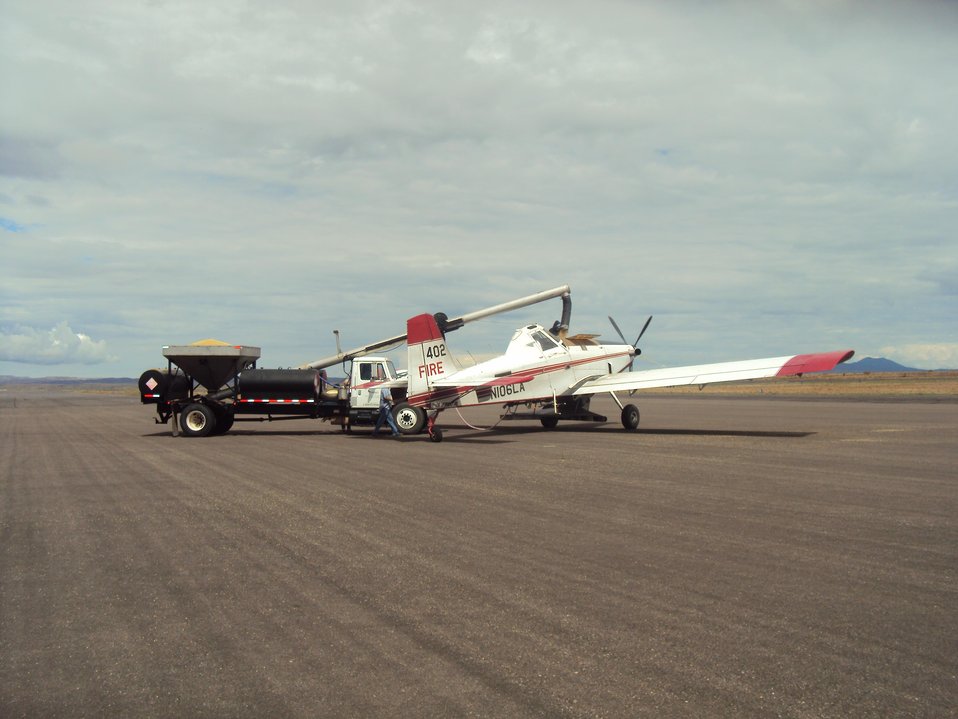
Seed is loaded into the Air Tractor for aerial seeding of severe burned areas of the Silver Fire. The Silver Post Fire response has the Burned Area Emergency Response (BAER) team beginning operations to seed acres of high burn severity and to mulch additional acres. Seeding reduces effects to downstream life, property, and infrastructure by reducing erosion and runoff. Areas of high burn severity are to be seeded with a quick germinating, non-persistent annual cereal barley that would provide rapid ground cover. A small percentage of native perennial species would also be included to give the burned area a jump start in natural recovery, and provide for long-term ground cover. Mulch is the most effective treatment for controlling erosion and runoff, as it provides immediate ground cover. Mulch also assists in stabilizing soil in and around these areas. Aircraft for seeding operations will be based at the Gila National Forest Air Tanker Base.